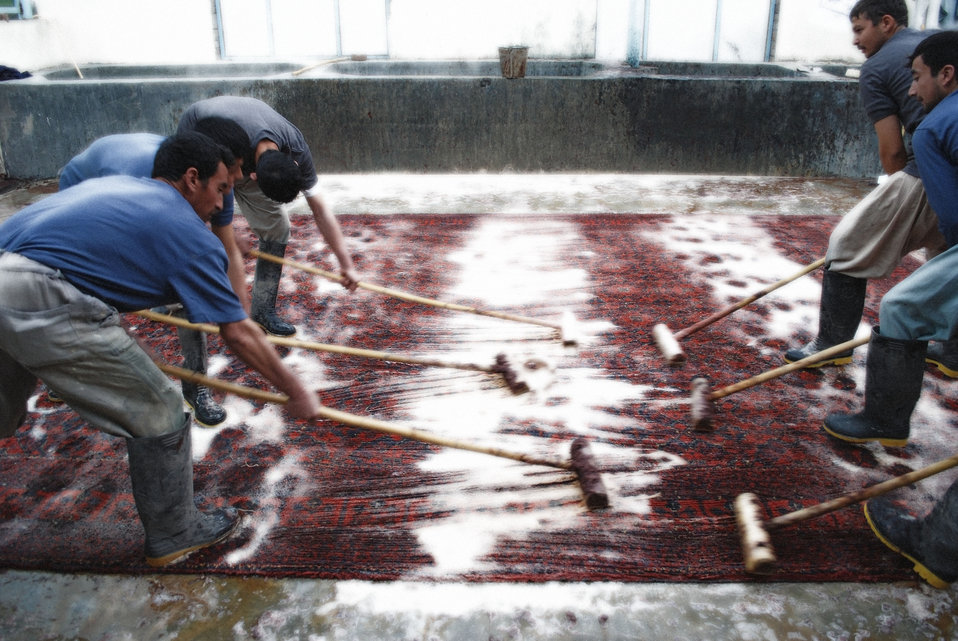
'On the Road' in Nangarhar Province